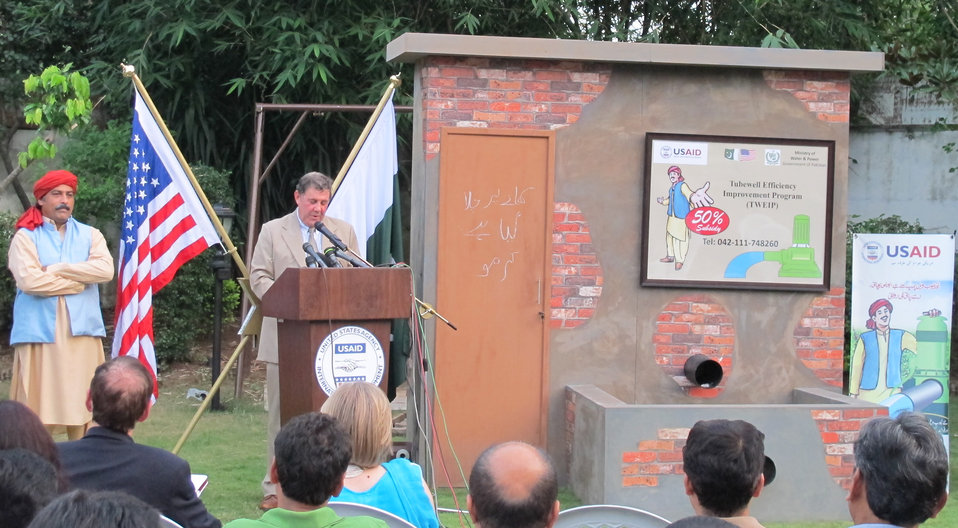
Launch of first-ever behavioral change campaign for energy efficiency in agriculture sector

Islamabad, July 28, 2011 – USAID contractor John Pullinger introduces the USAID-sponsored first-ever behavioral change campaign for energy efficiency in the agriculture sector at an event in Islamabad. Brand Ambassador Karmoo is looking on (left side of the photo).

This energy efficiency campaign is sponsored by the U.S. Government as part of the United States commitment to support the Government of Pakistan in strengthening the country’s energy sector. This commitment was affirmed by U.S. Secretary of State Hillary Clinton in October 2009, when she announced a number of new energy programs. Through these programs, the U.S. Government is now working with Pakistan to reduce energy transmission losses, to improve energy production, and to increase the efficiency of the energy use.

The United States energy assistance, delivered by the U.S. Agency for International Development (USAID), includes a number of programs that together, will increase energy production capacity by approximately 600 Mega Watts.